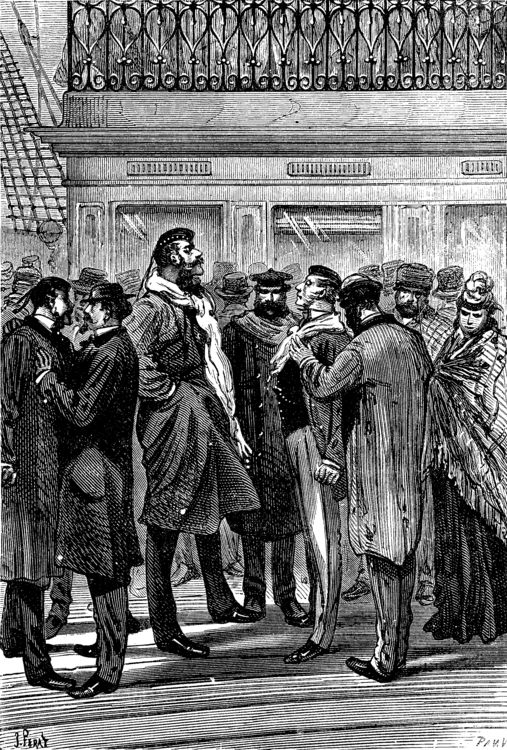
An illustration from Jules Verne's novel 'A Floating City' (1869) drawn by Jules Férat. Polski: Ilustracja powieści Juliusza Verne'a 'Pływające miasto' (1869) autorstwa Julesa Férata. Français : Jules Verne: 'Une Ville flottante' (1869), dessins par Jules Férat. Orginal text: Français : Il traita Drake avec une dureté.